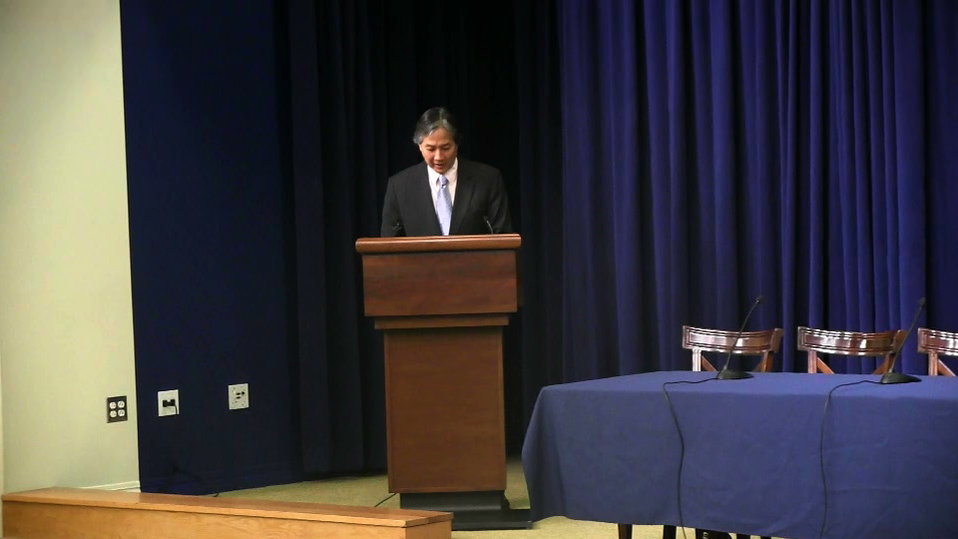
Koh3